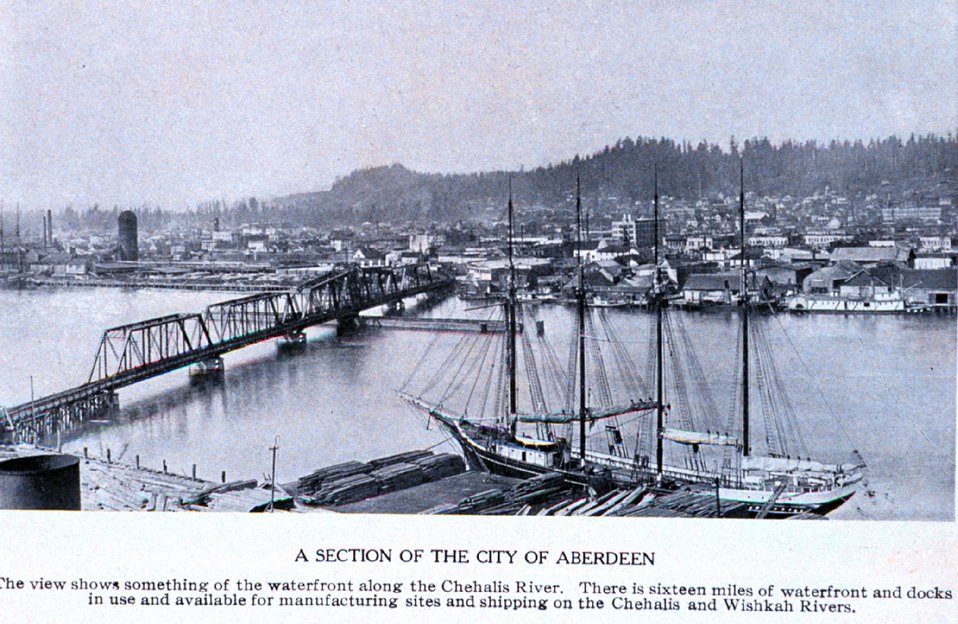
'A Section of the City of Aberdeen' along the Chehalis River. In: 'Puget Sound and Western Washington Cities-Towns Scenery', by Robert A. Reid, Robert A. Reid Publisher, Seattle, 1912. P. 153.